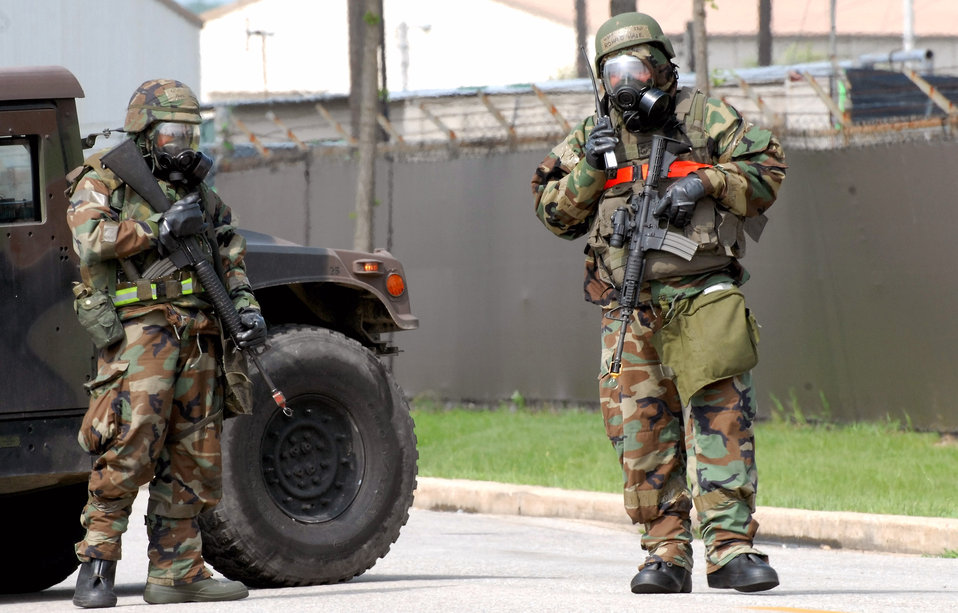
BEVERLY BULLDOG

Members of the 8th Security Forces Squadron stand guard at an intersection during a bomb threat July 22 at Kunsan Air Base, South Korea. The bomb threat is a part of the peninsula wide operational readiness exercise being conducted to evaluate the wing member's readiness and ability to perform their wartime mission.